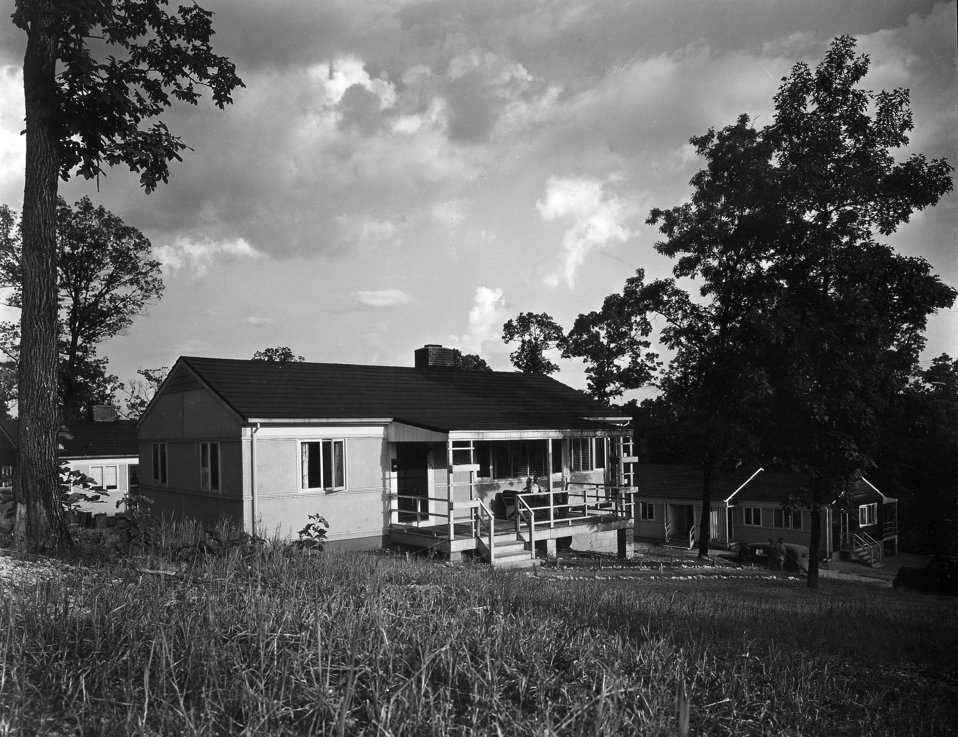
B House Oak Ridge

MED 116 DOE photo by Ed Westcott Cemesto house B House Oak Ridge Tennessee 1944